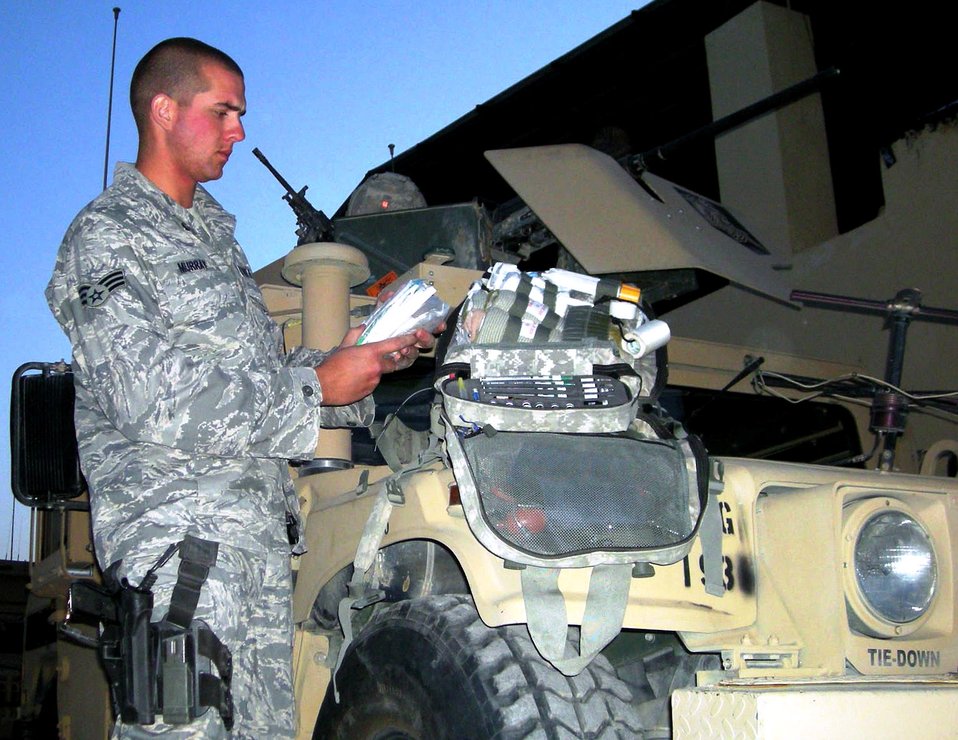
Airmen medic comes to aid of Soldiers, Afghans

Senior Airman Neil Murray stocks his medical bag before heading out on a convoy Dec. 4 at Forward Operating Base Maholic, Afghanistan. Airman Murray is a combat medic here. Combat medics are usually the first to treat wounded servicemembers and stabilize them for transport to medical facilities.